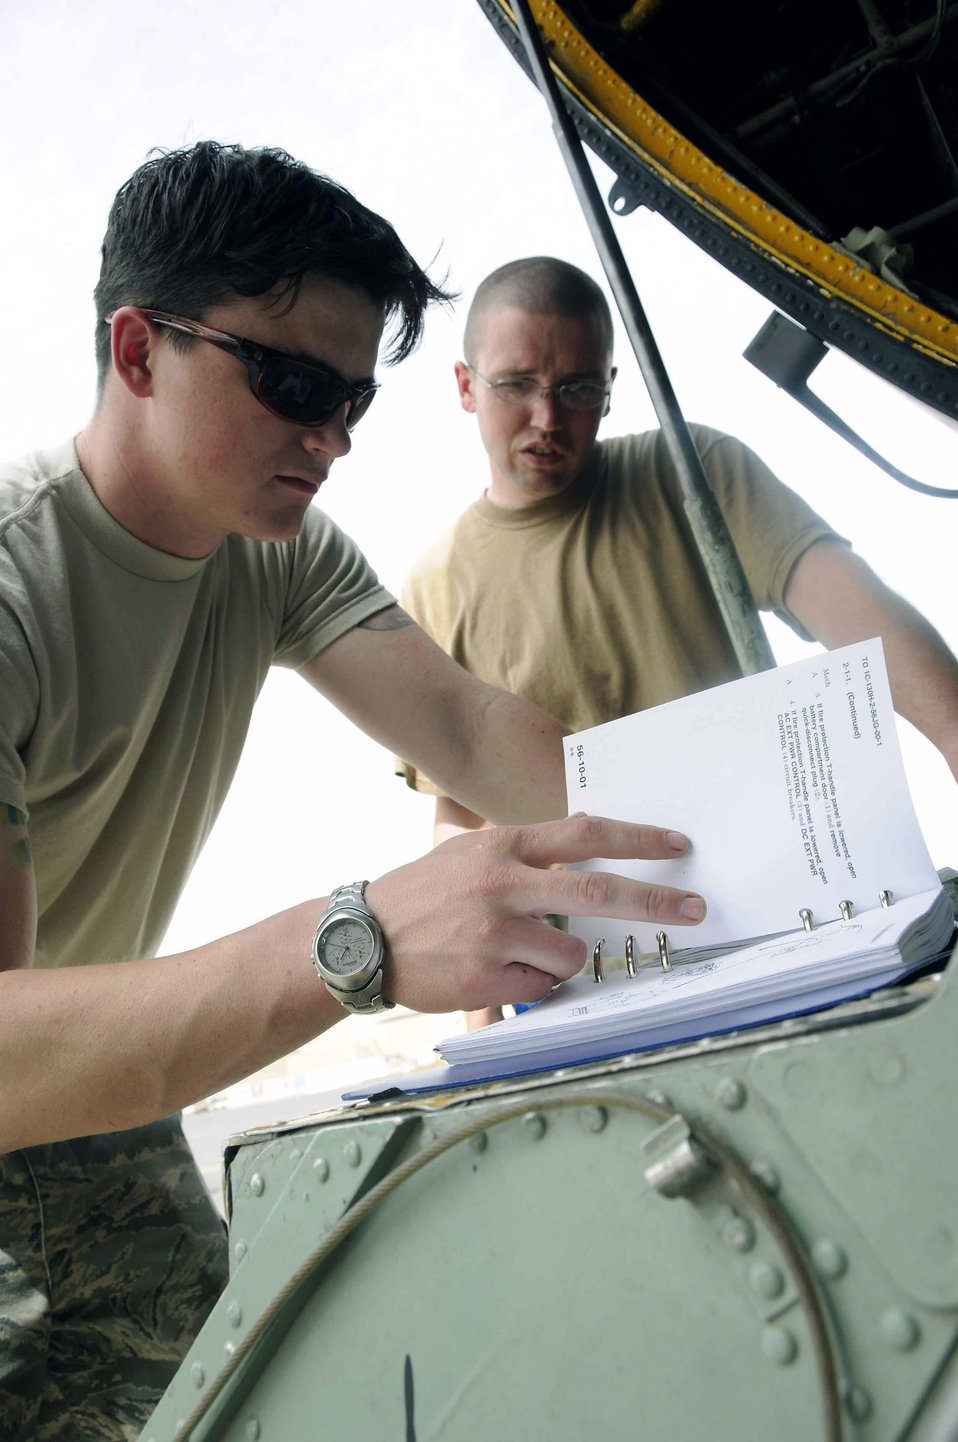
C-130 unit gets a new bird with an old history

Senior Airman Richard Herling (left) and Tech. Sgt. Kevin Sanderson perform maintenance on a C-130 Hercules at an air base in Southwest Asia. The newly acquired aircraft, known as